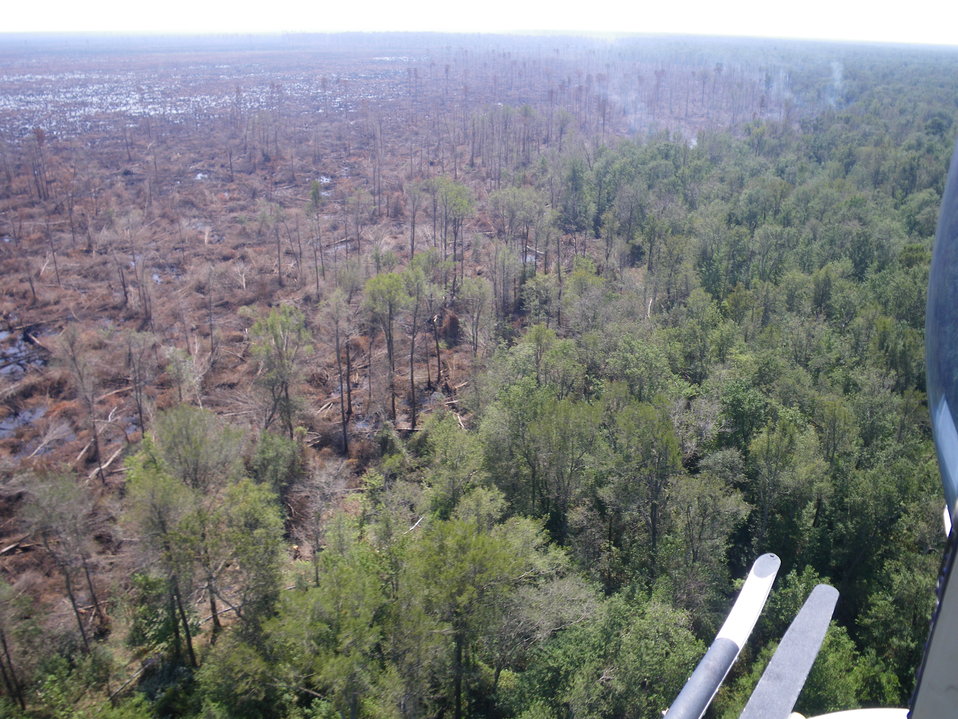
Still smokin' after Irene

Suffolk, VA, August 2011: A helicopter flight over the Lateral West Fire burning on Great Dismal Swamp National Wildlife Refuge after Hurrican Irene passed reveals about 30 spots of smoke. The foot of rain the area received was still not enough to fully extinguish the fire, which burned over 6,300 acres.